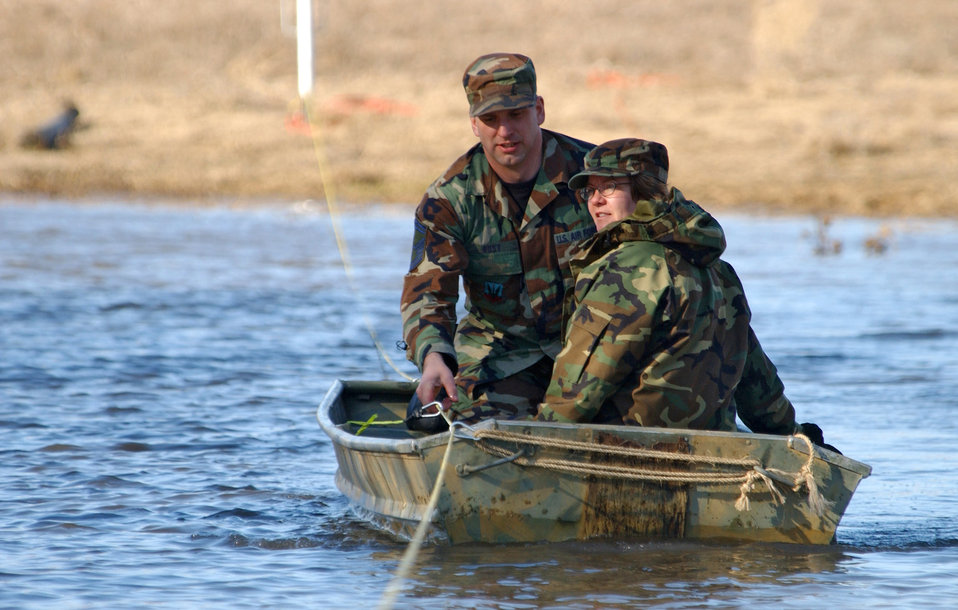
Rising river

Senior Master Sgts. Brian and Kathy Rust use a boat to commute to work at the North Dakota Air National Guard in Fargo, N.D., on Monday, April 3, 2006, after the rising Wild Rice River flooded the roads near their home. Both are with the 119th Fighter Wing.